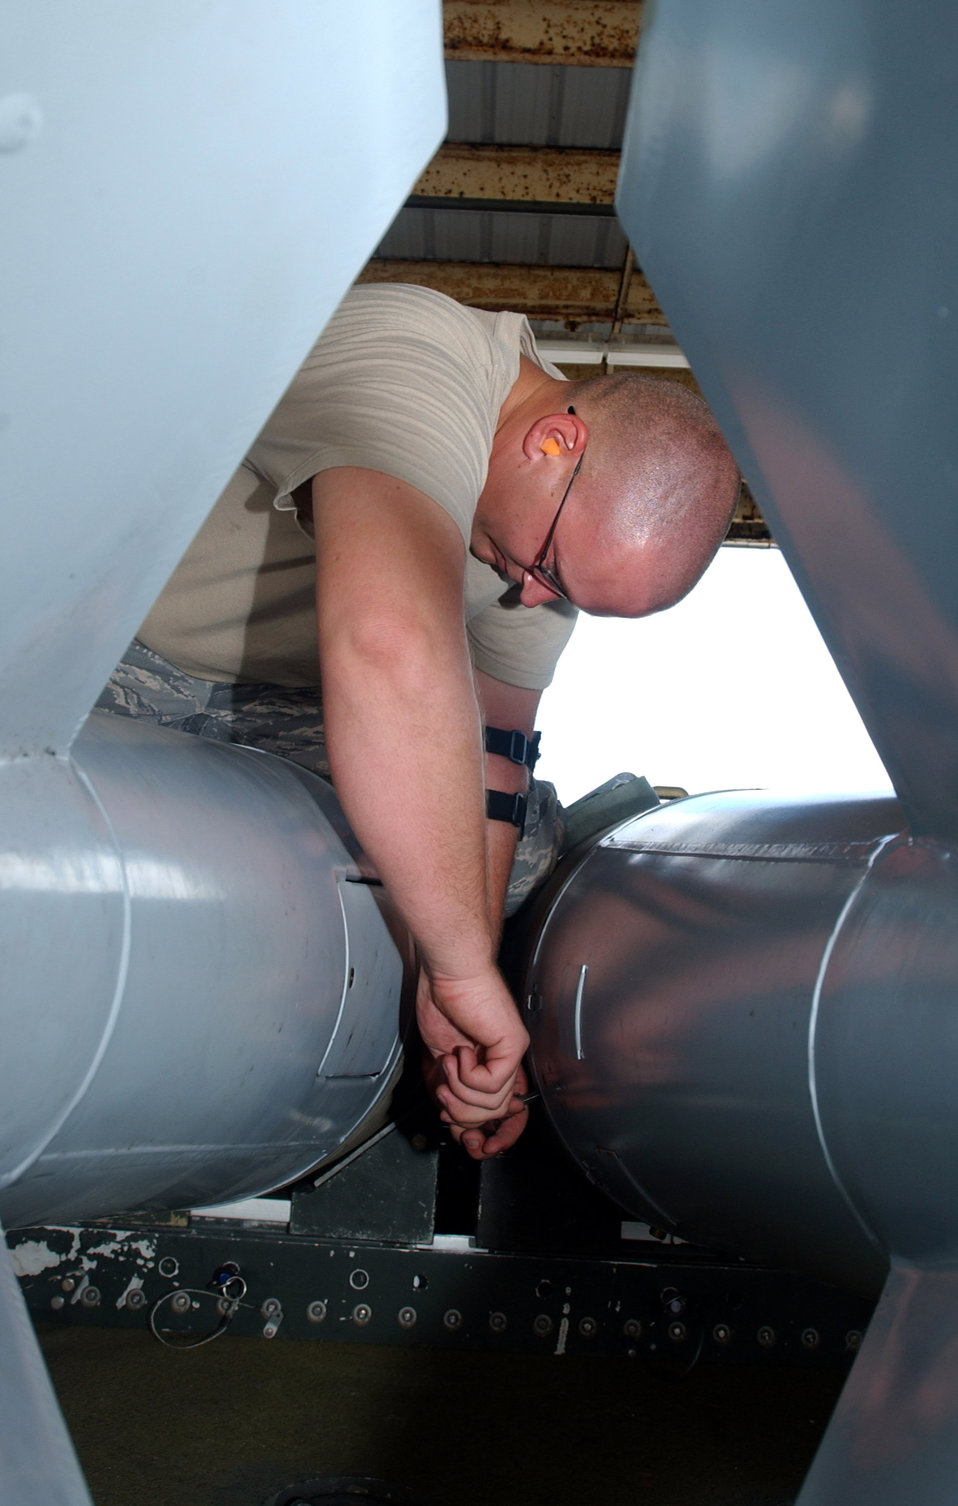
Without ammo, it's just another airplane

Staff Sgt. Matthew Prechtel installs the stabilizing fins on a Mark-84 bomb prior to loading it on a B-2 Spirit stealth bomber. Sergeant Prechtel is a munitions specialist with the 36th Munitions Squadron at Andersen Air Force Base, Guam.